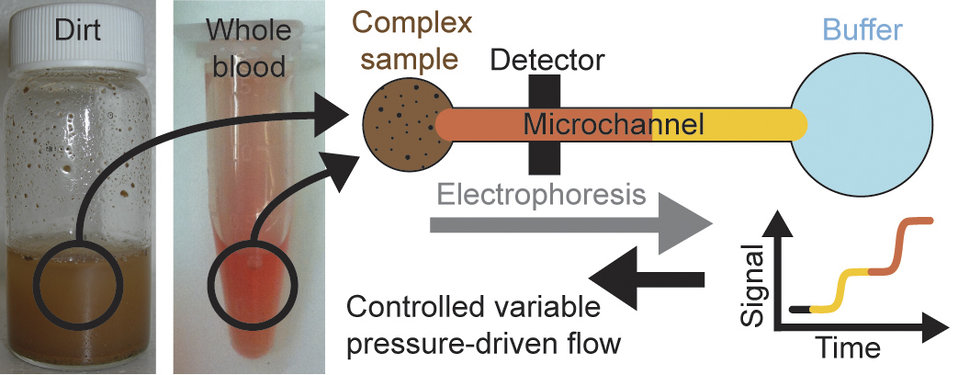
GEMBE Device

Illustration of a GEMBE device: a complex biological sample such as dissolved dirt or whole blood is pushed by an electric field toward a microchannel. Buffer fluid flowing in the opposite direction acts as a gate. Gradually reducing the bufffer flow slowly 'opens' the gate, allowing individual components from the sample to enter the microchannel when the pressure becomes weaker than the electric force pushing each component molecule. These molecules then travel past a detector that analyzes them. Unwanted components are kept out of the microchannel.